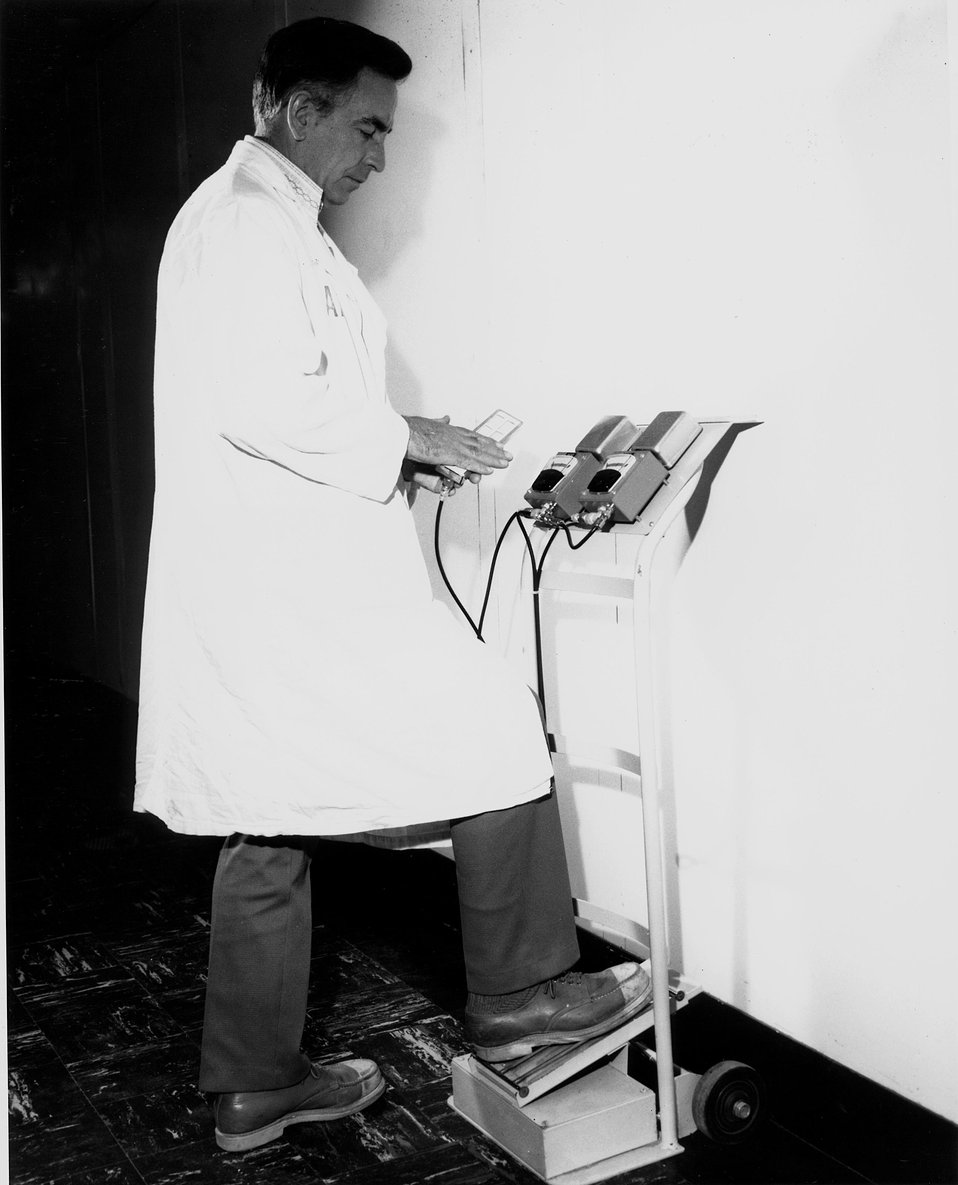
Employee checking hands and feet for alpha radiation contamination using a portable alarming hand and foot counter.